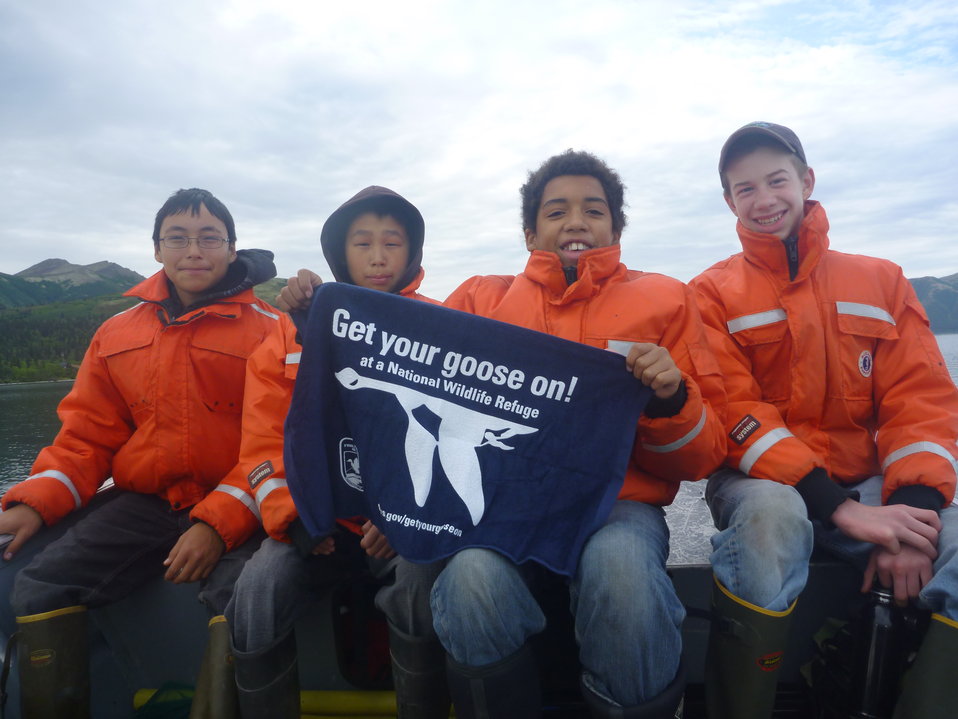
GYGO! - Alaska Style!

These youngsters Get Their Goose On! at Togiak National Wildlife Refuge in southwest Alaska.

The refuge supports 35 species of fish, 30 species of terrestrial mammals, 17 species of marine mammals, and 201 bird species.